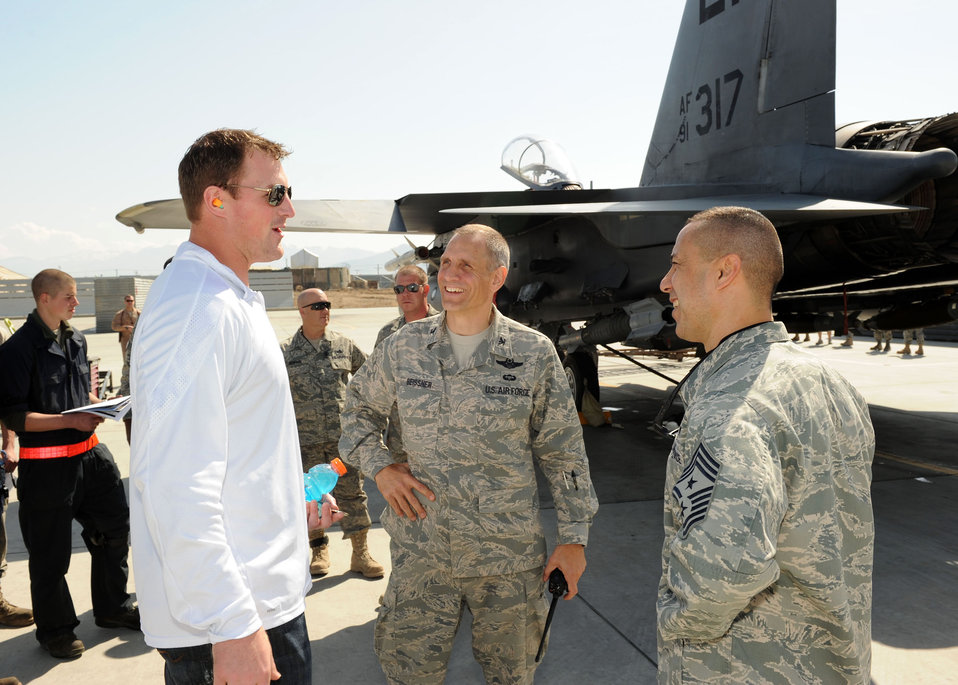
NFL players visit Bagram Airmen

Jason Witten (left) of the Dallas Cowboys talks with Col. James Beissner and Chief Master Sgt. Jeffery Cui during a recent National Football League players visit March 5, 2010, to Bagram Airfield, Afghanistan. Colonel Beissner is the 455th Air Expeditionary Wing vice commander and Chief Cui is the 455th AEW command chief master sergeant.